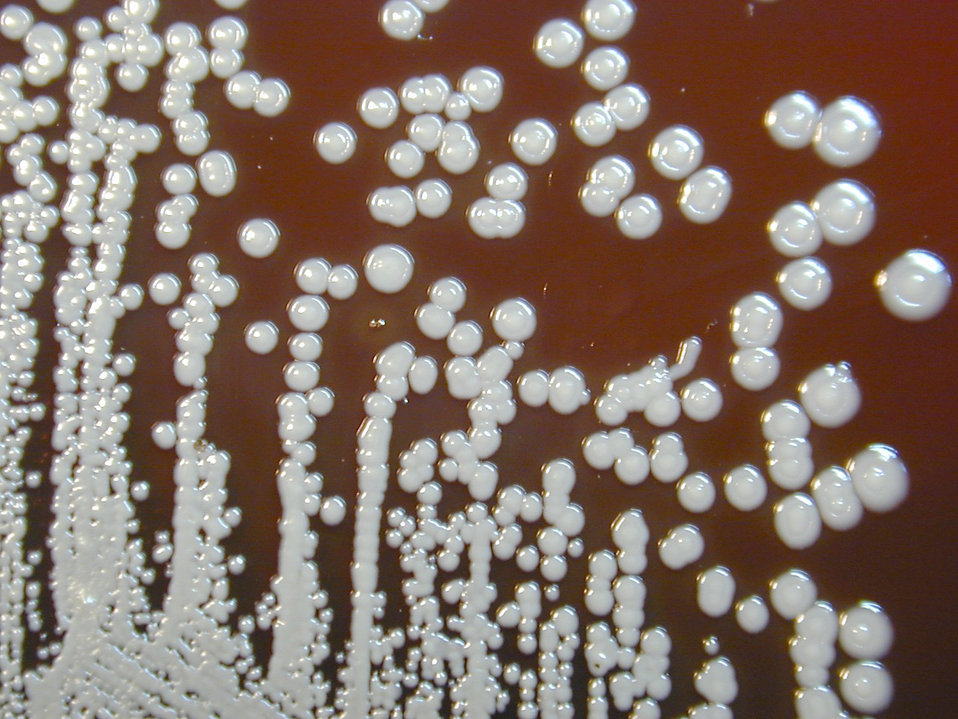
Burkholderia pseudomallei grown on sheep blood agar for 72 hours.